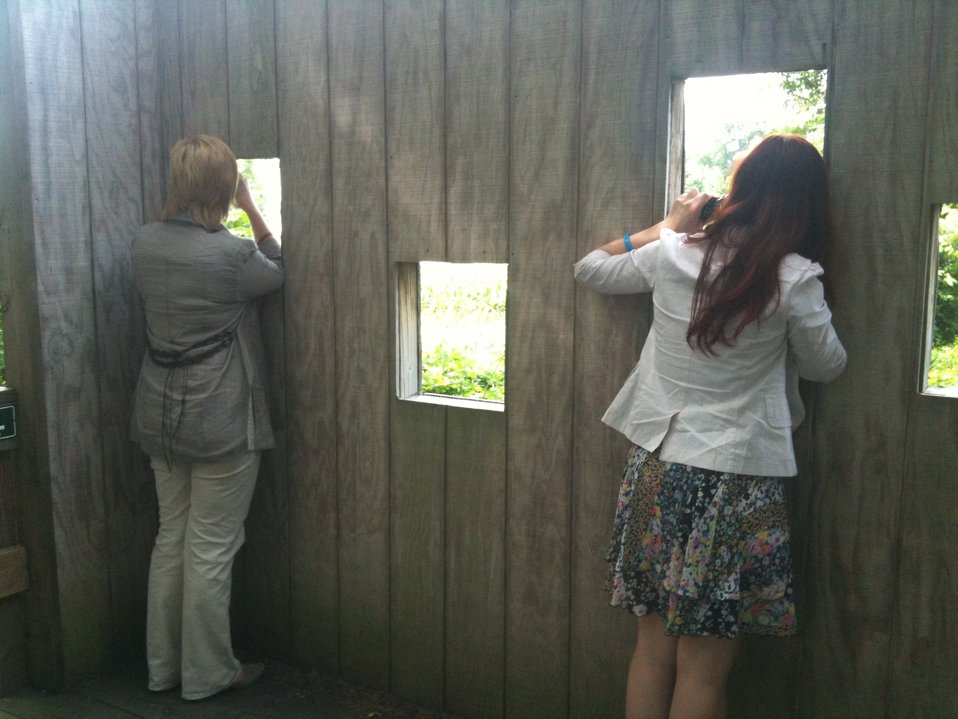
Occoquan Exchange 2

Scientific exchange at Occoquan National Wildlife Refuge.